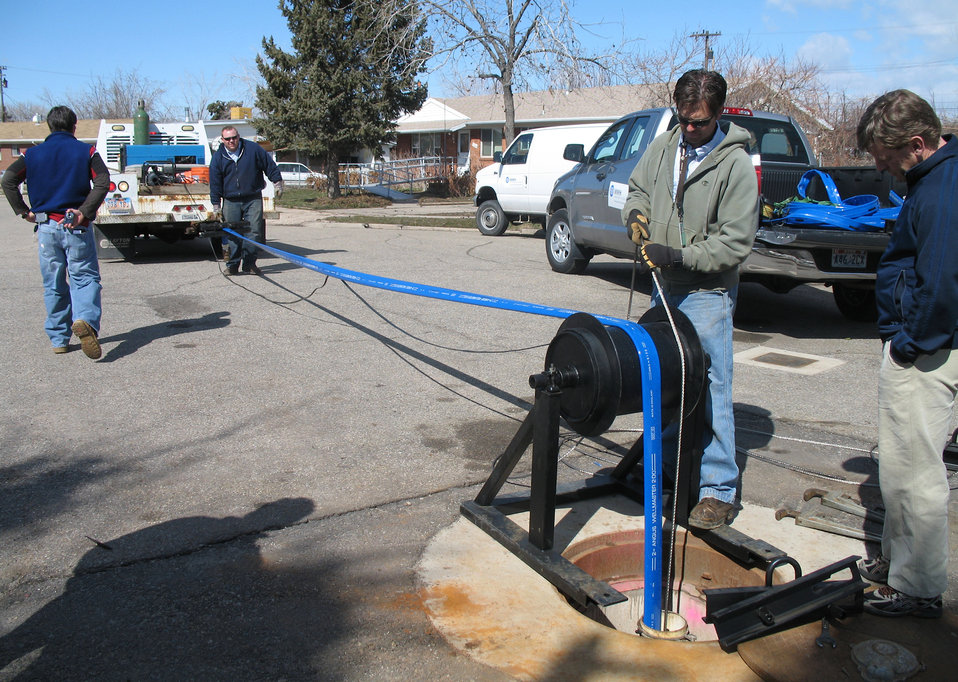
Two AF bases take top DOD honors for environmental work

The 75th Civil Engineer Group restoration team conducts fieldwork and sampling in a community neighboring Hill Air Force Base, Utah, recently. Hill AFB was recently awarded top Department of Defense honors for their work in environmental restoration, which includes public involvement and notification in the cleanup process.